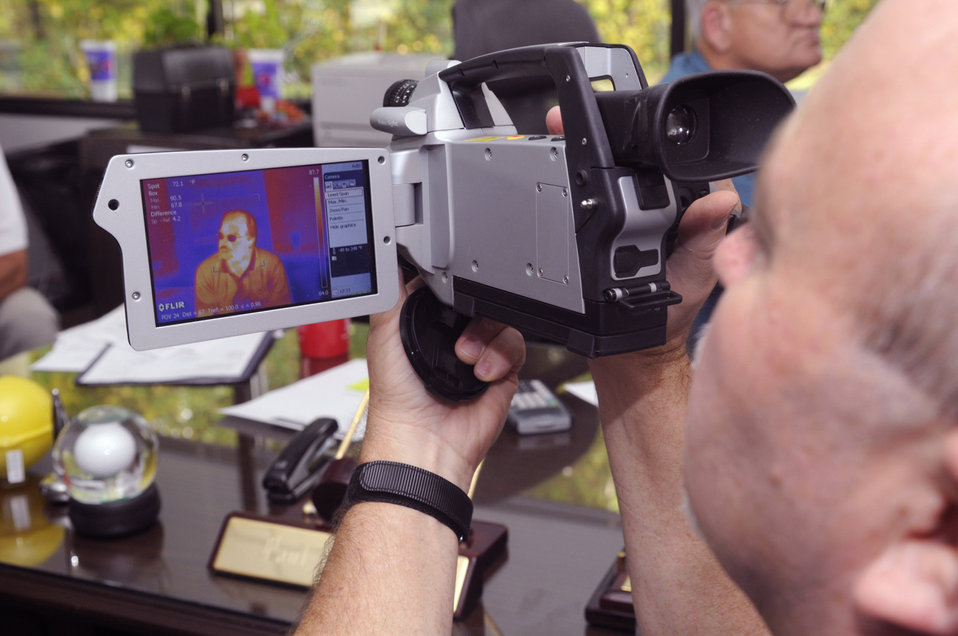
Infrared camera saves base money, time

Wayne Merritt demonstrates the thermocam July 24 at Robins Air Force Base, Ga. Mr. Merritt is a 78th Civil Engineer Squadron predictive maintenance member.